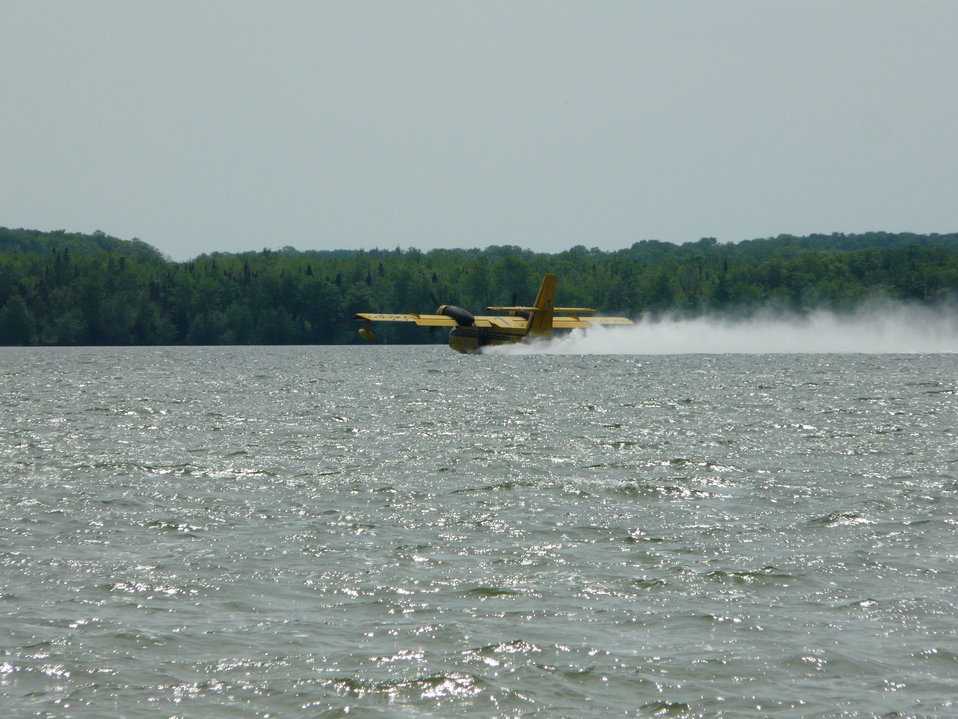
CL-215 Picking up water from Big Manistique Lake

The CL-215 airplanes used during the Pine Creek North wildfire can scoop up to 1400 gallons of water in ten seconds. The planes came from Minnesota and were flying to and from the nearby Big Manistique Lake to replenish their water supply.